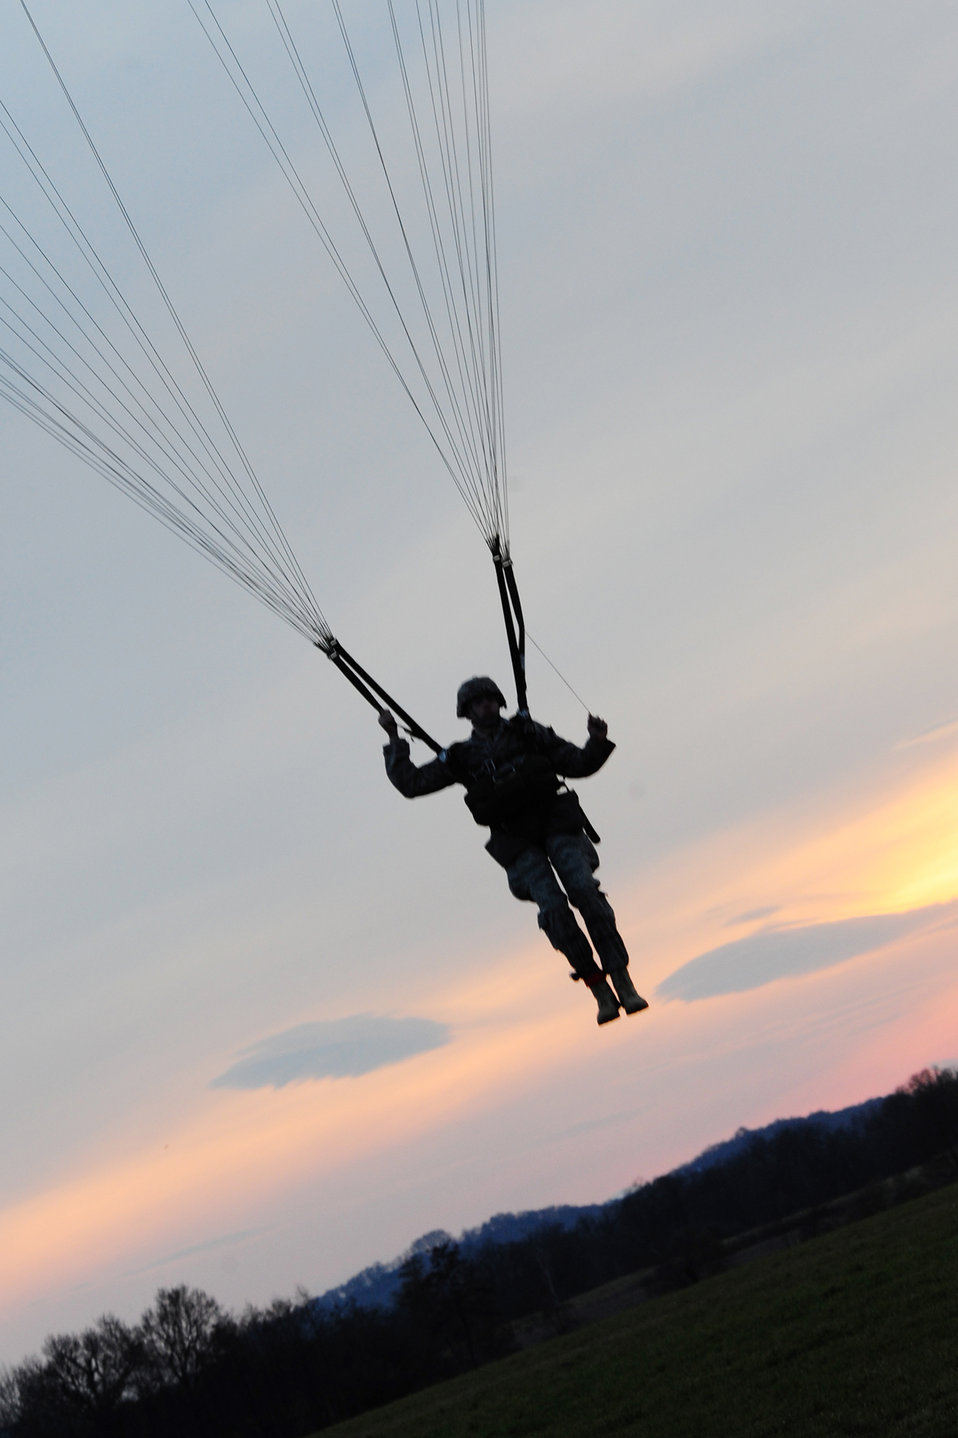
Looking good...

An Airman descends to the ground during a multi-nation jump with the French military, March 2, 2010. Members of the 435th Contingency Response Group and the 5th Quartermaster Company located in Germany joined with their French military counterparts for a week of training in Pau, France.